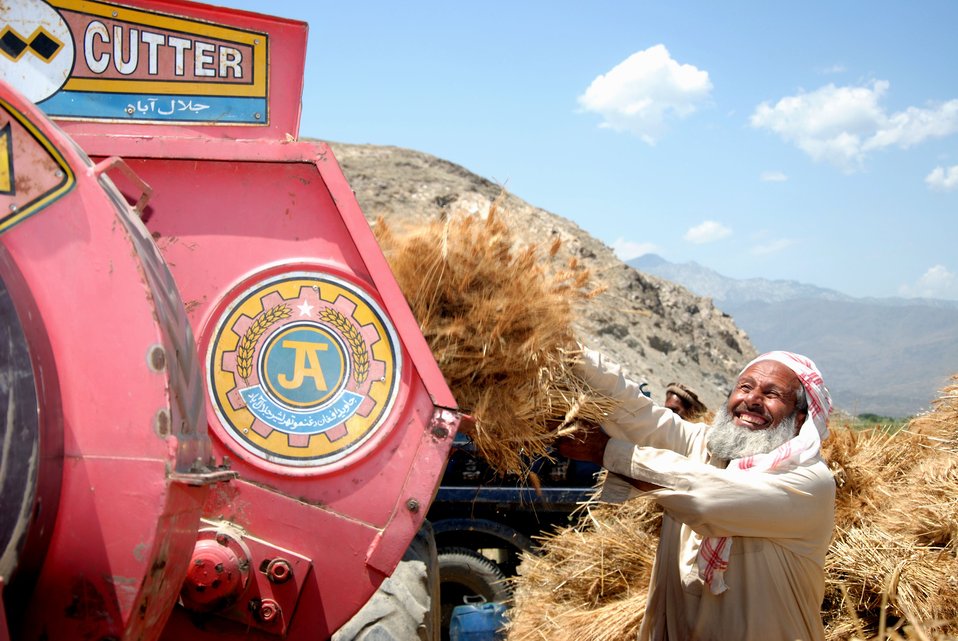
Helping Farmers

Nearly 4,000 wheat farmers benefited from USAID’s Agricultural Development Fund last year. This project has helped more than 15,000 farmers in 25 of Afghanistan’s 34 provinces.